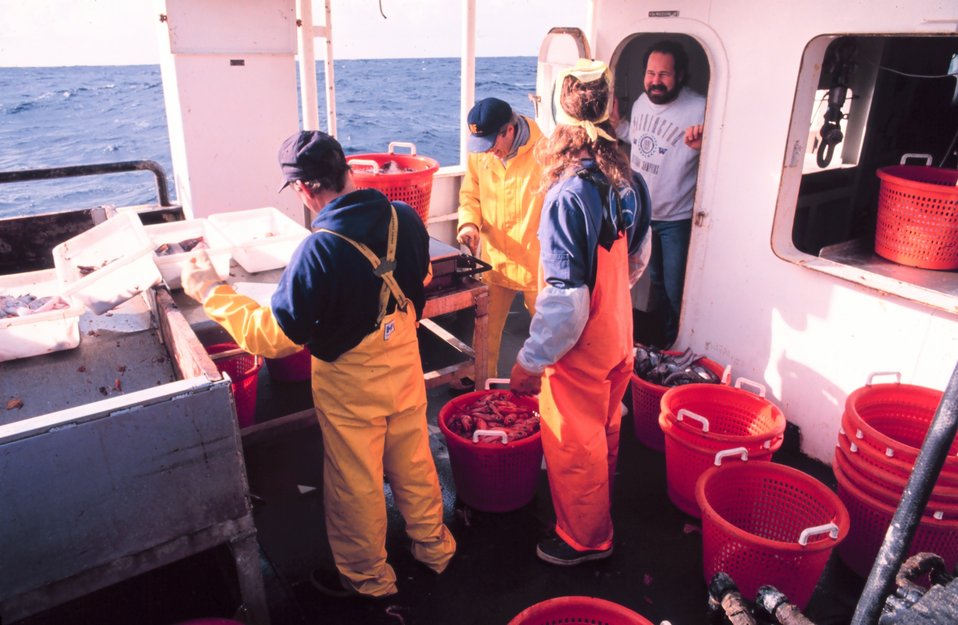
Sorting catch on MILLER FREEMAN